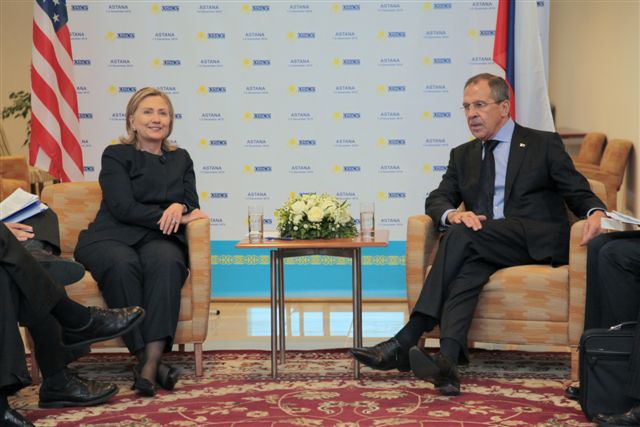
Secretary Clinton Holds a Bilateral Meeting With Russian Foreign Minister Lavrov

U.S. Secretary of State Hillary Rodham Clinton holds a bilateral meeting with Russian Foreign Minister Sergey Lavrov at the OSCE Summit in Astana, Kazakhstan, on December 1, 2010.